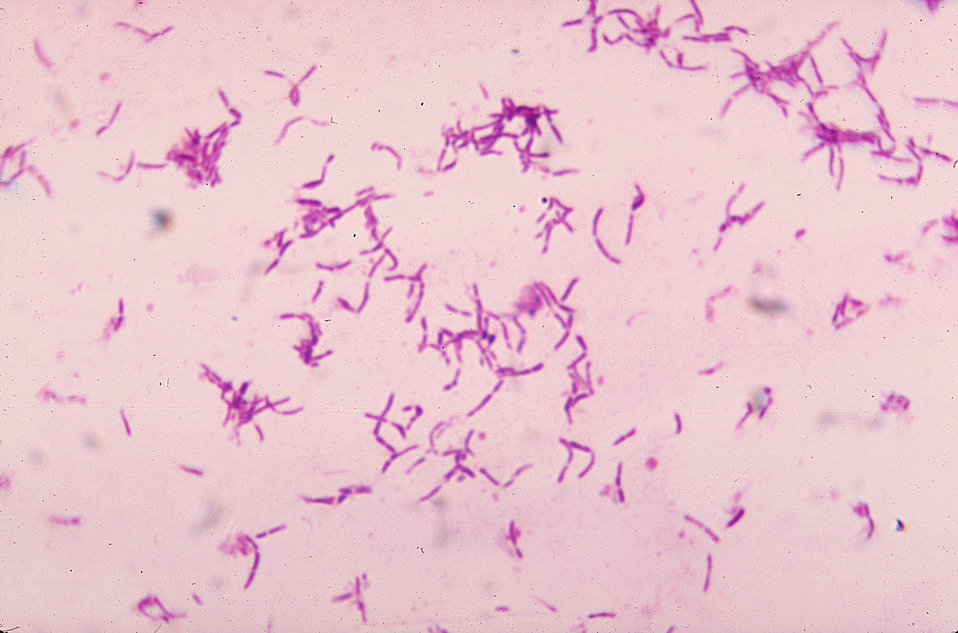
This micrograph depicts the gram-positive bacterium Bifidobacterium eriksonii.